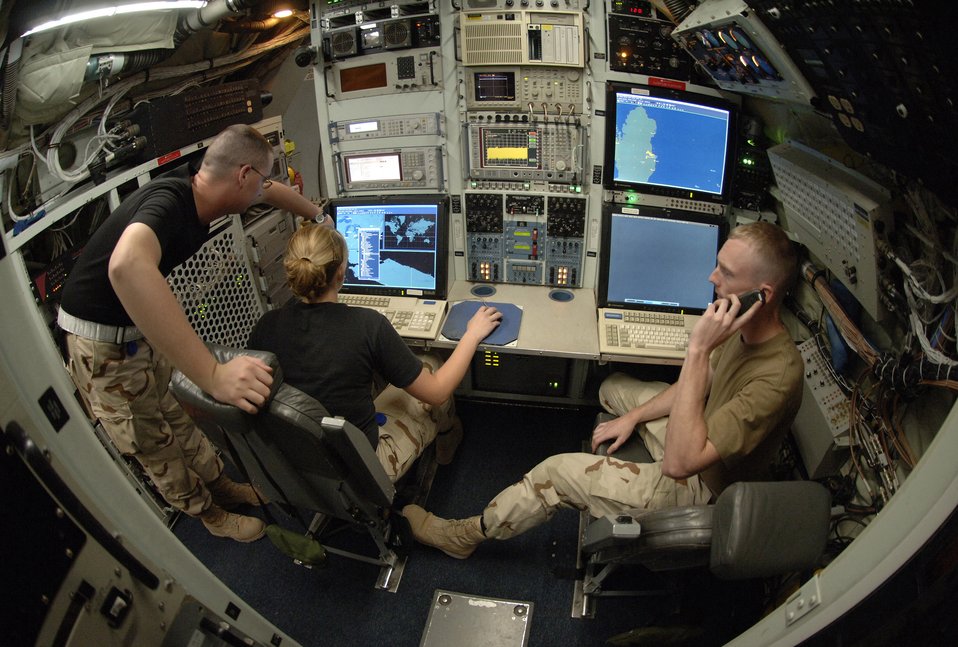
Signal test

Senior Airman Weylin Oliver and Airman 1st Class Ami Grabowski create and route test signals from a maintenance station aboard an RC-135 Rivet Joint reconnaissance aircraft deployed to Southwest Asia while Senior Airman Dennis Kidwell fields a call from his maintenance supervisor.